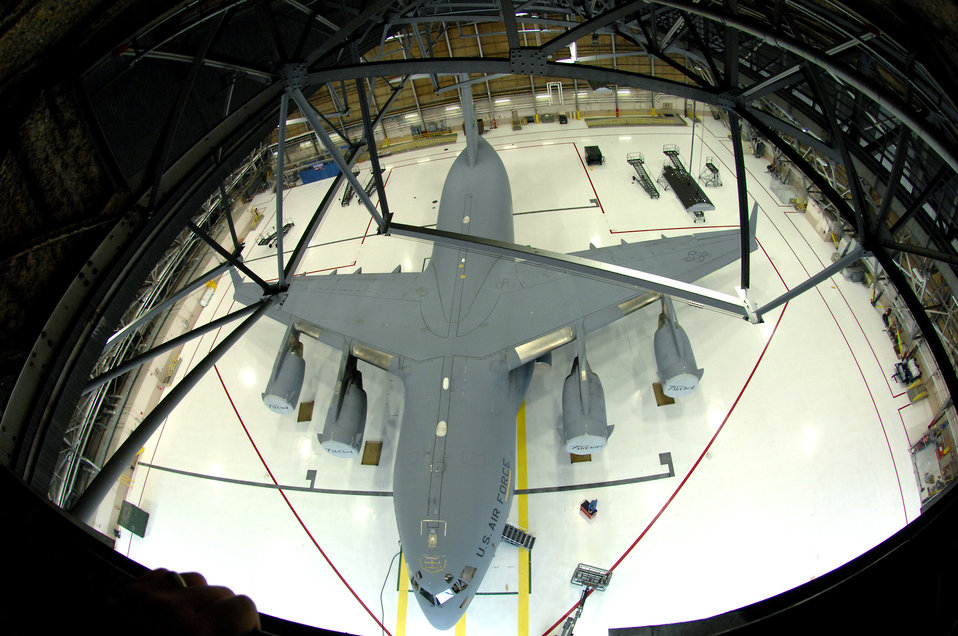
Glimmering Globemaster IIIs

A C-17 Globemaster III sits in Hangar 3 after being pressure washed during a routine home station inspection Jan. 29 at McChord Air Force Base, Wash. Regular aircraft cleaning enhances the aircraft's aerodynamic efficiency and overall appearance.